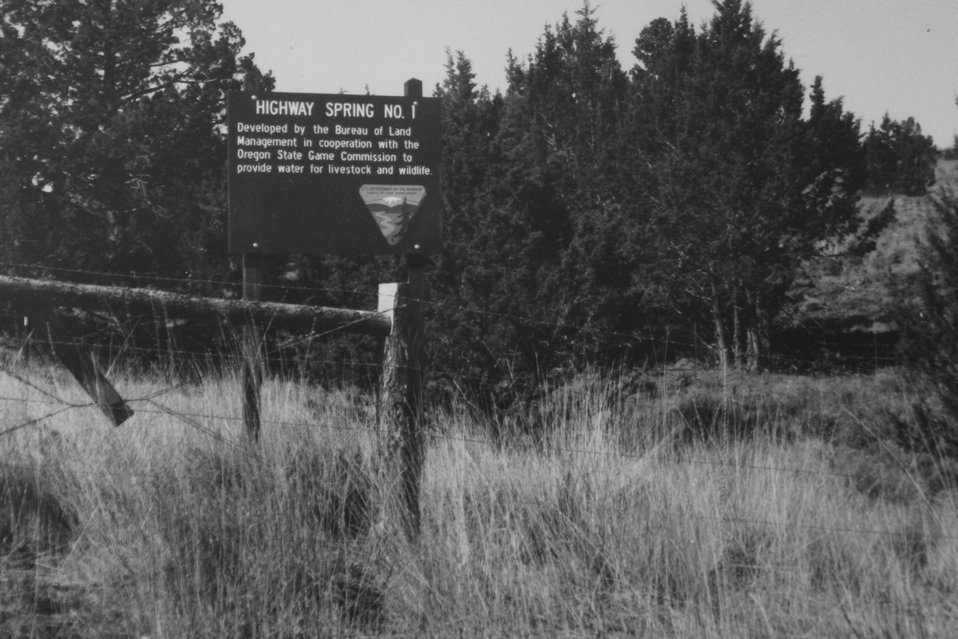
Highway Spring #1 Joint BLM and ODF&W project in Stinking Water Mountains area. circa 1968